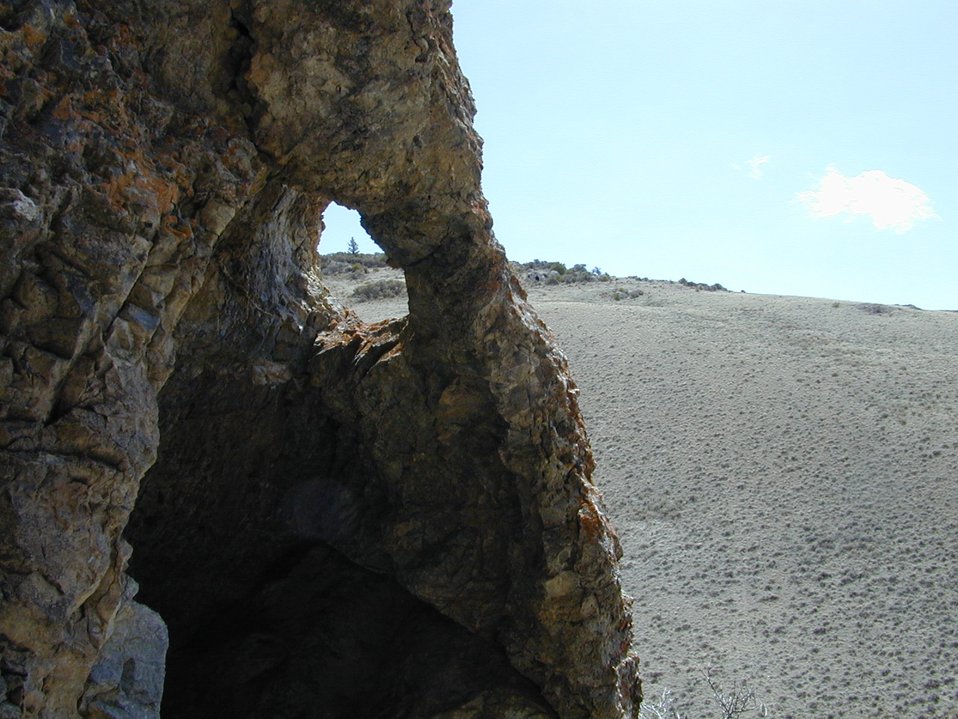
Jaguar Cave Birch Creek Valley Salmon Field Office Upper Columbia-Salmon Clearwater District